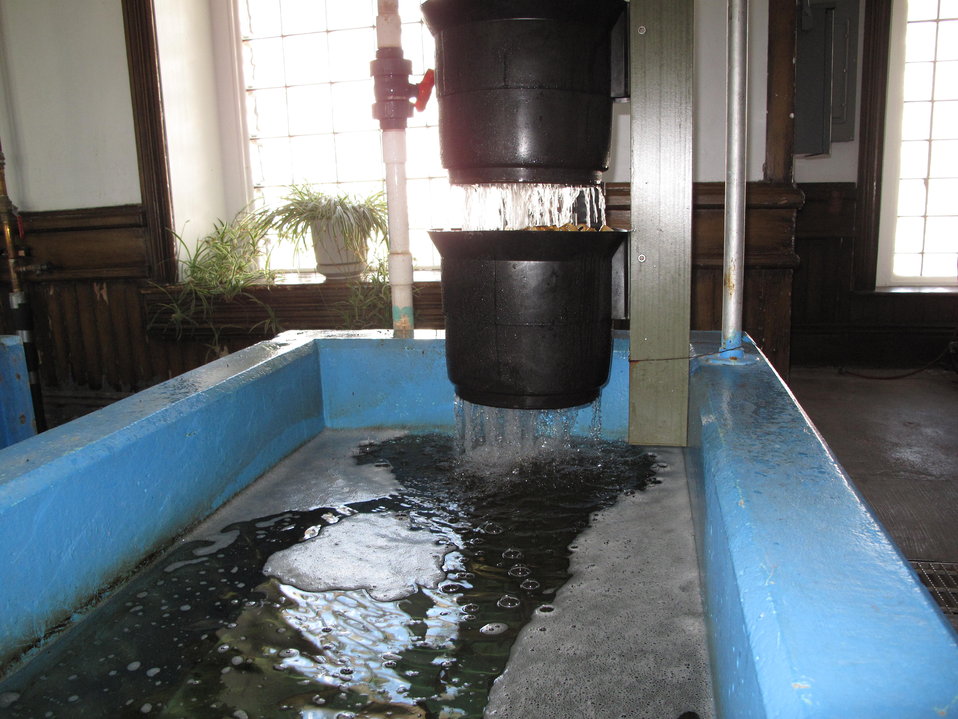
Leadville National Fish Hatchery

These cement raceways located inside the main building contain 1 and 2 year-old Greenback cutthroat trout.